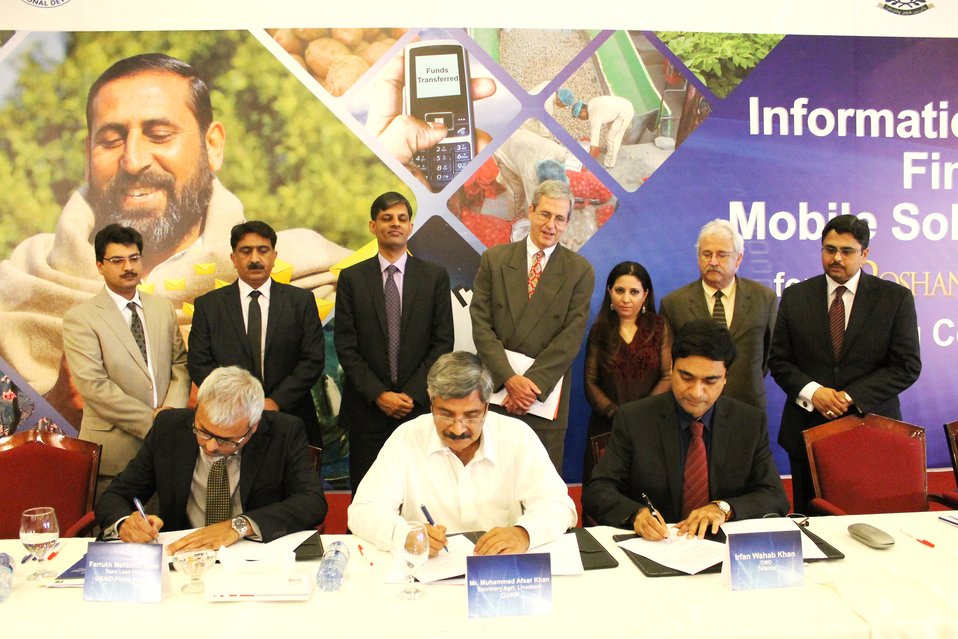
Pilot for Information and Financial Mobile Solutions - MoU Signing

USAID Firms Project signs MoU with Government of Khyber Pakhtunkhwa and Telenor Pakistan in Islamabad today